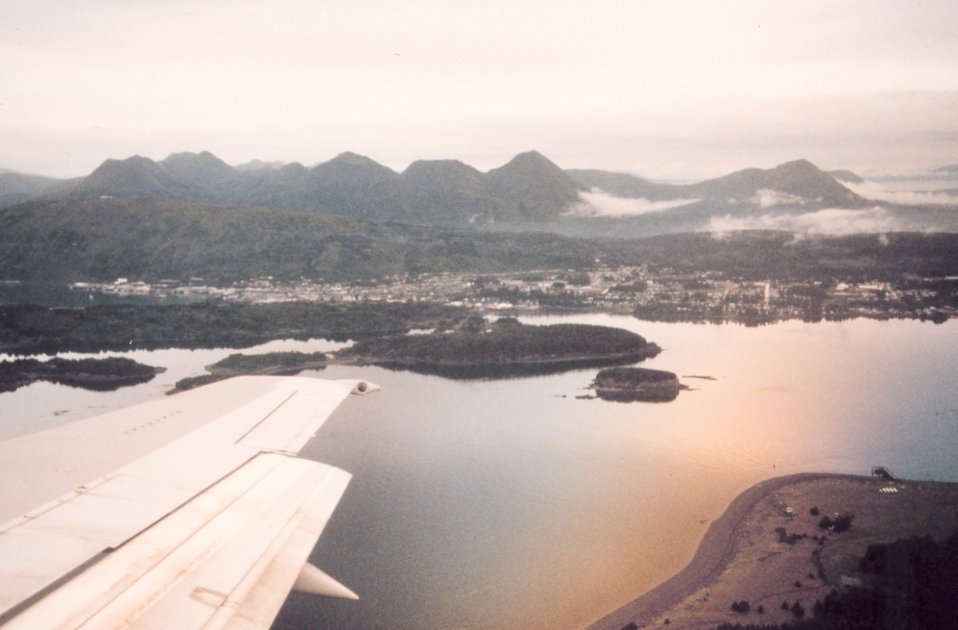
Kodiak from the air over Chiniak Bay